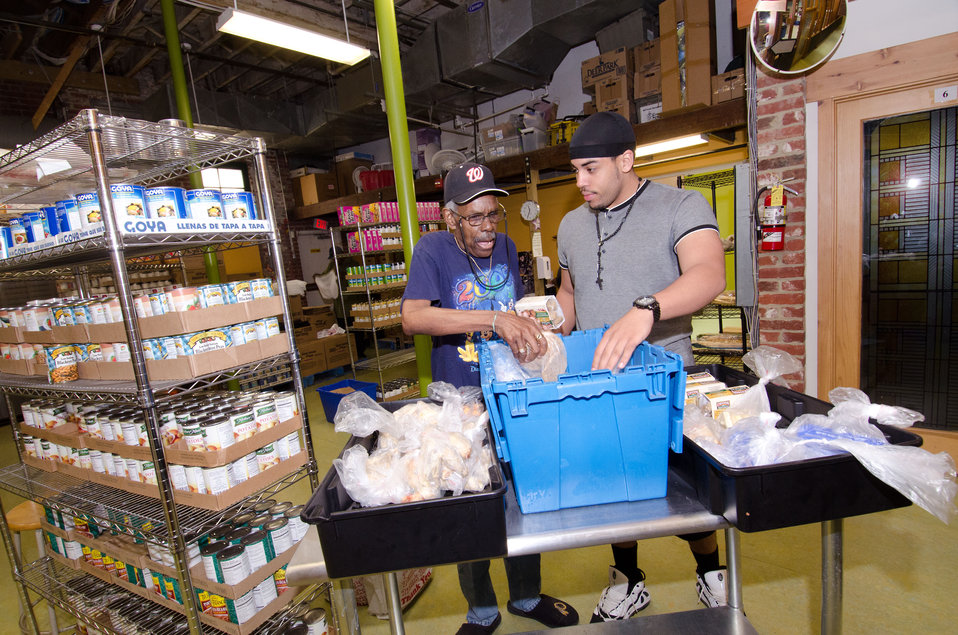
Kevin McNeil (right) helps Walter Garnett with his selection of food from Bread for the City on Friday, April 29, 2011 in Washington, DC.